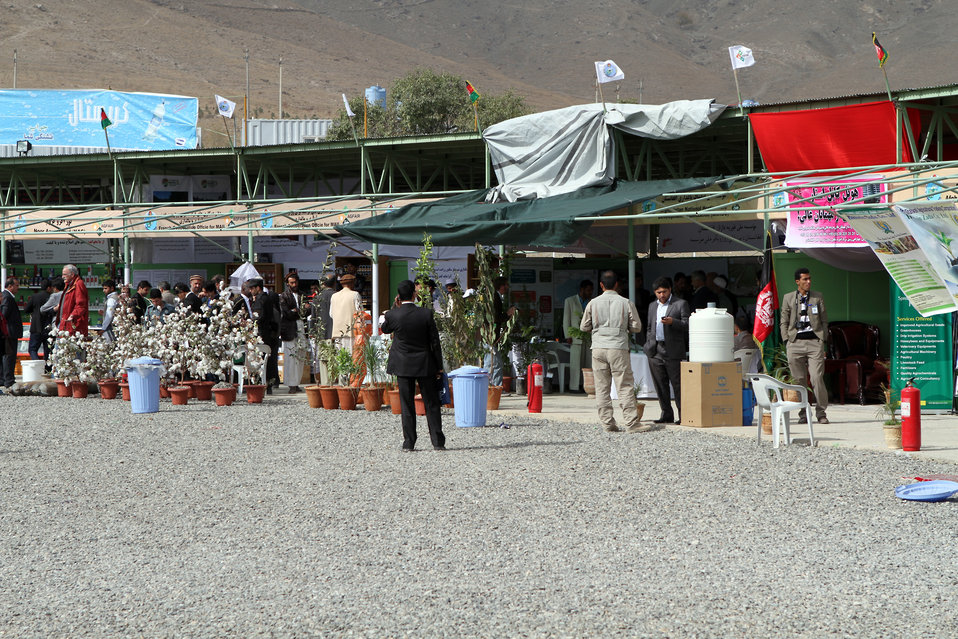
Agfair event